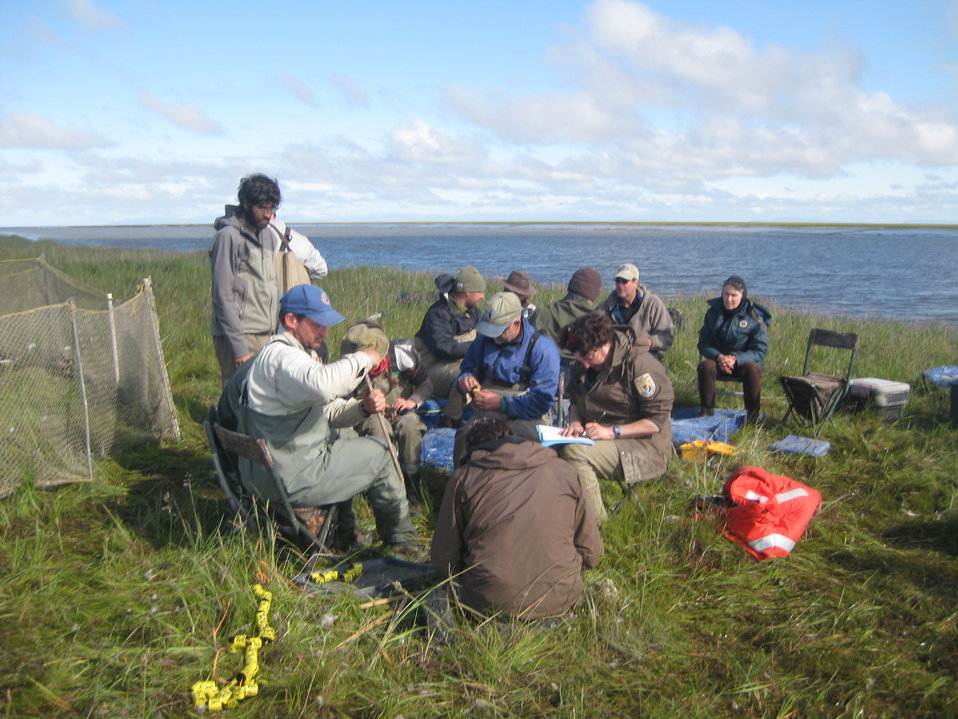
Banding together

A group of biologists, volunteers, biotechs, refuge staff, migratory bird management staff, etc joined forces to band and collar cackling cackling geese on the Yukon-Kuskokwim Delta.

USFWS Yukon Delta NWR